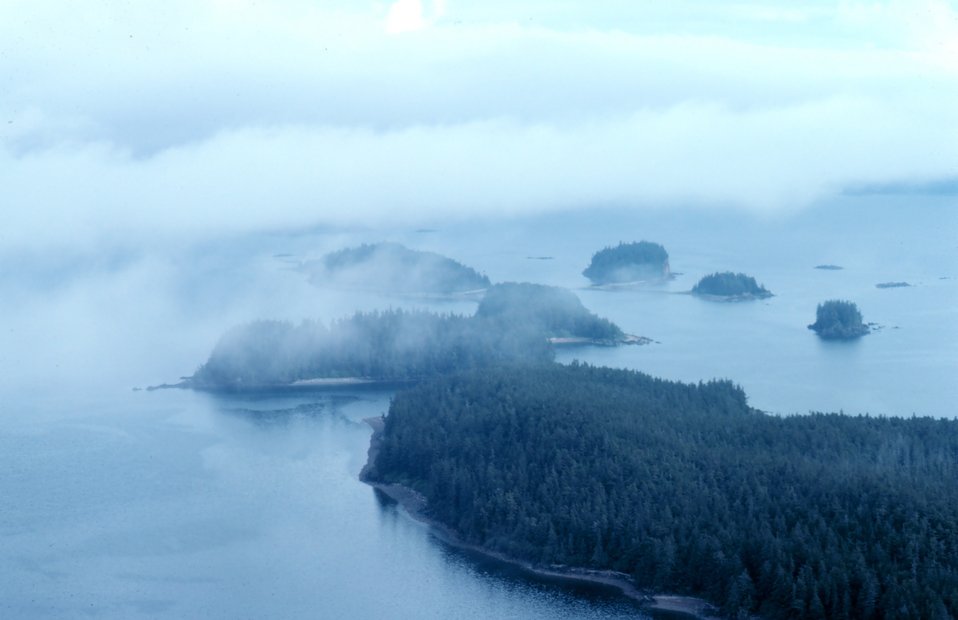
In mail plane enroute to NOAA Ship FAIRWEATHER. Near Tenakee Inlet.